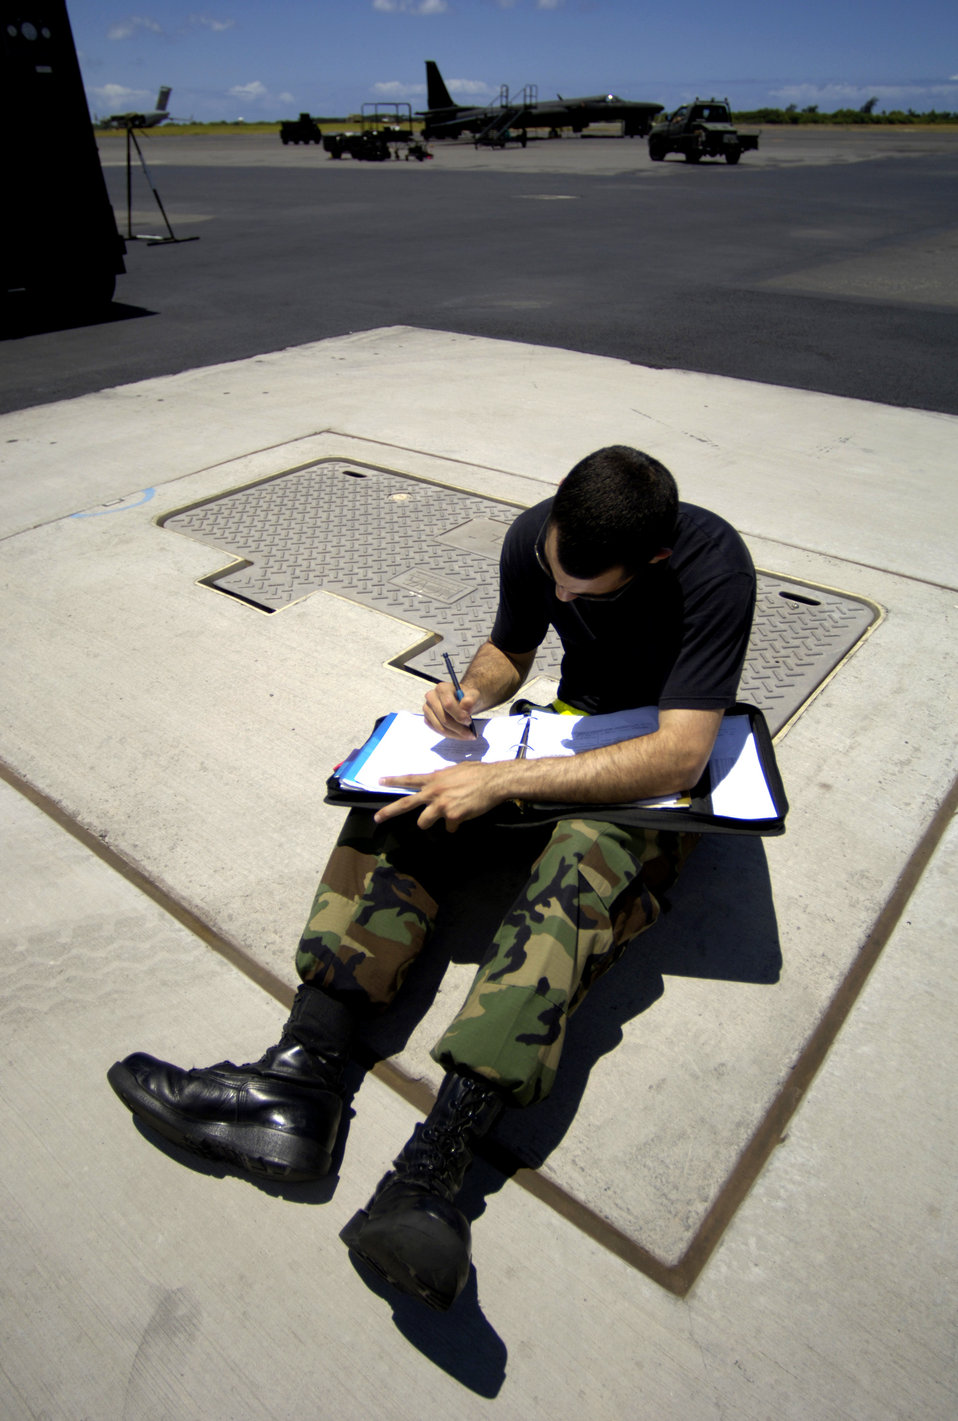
Dragon Lady face-lift

Staff Sgt. Andrew Di Betta annotates his maintenance log for a U-2 Dragon Lady at Hickam Air Force Base, Hawaii, on Tuesday, June 13. The aircraft is en route to South Korea. U-2s are undergoing a $1.5 billion upgrade. Cockpit instruments will be modernized with full-color displays that replace gauges and dials with state-of-the-art, touch-screen technology. Sergeant Di Betta is a crew chief with the 9th Maintenance Squadron at Beale Air Force Base, Calif.